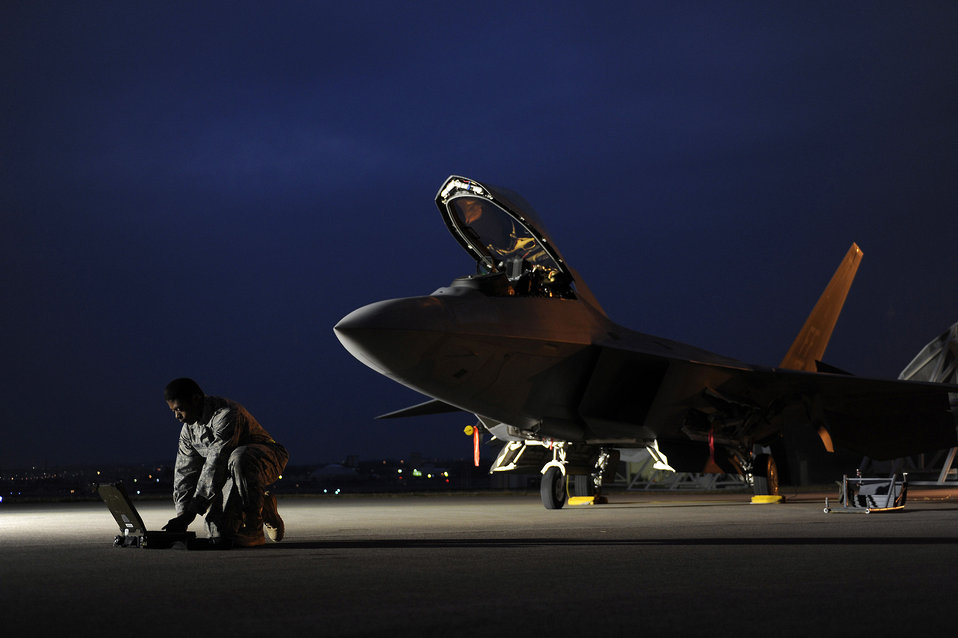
All systems go

Airman 1st Class Aaron Tate inputs data into his portable maintenance aid Jan. 21 in front of an F-22 Raptor at Kadena Air Base, Japan. Airman Tate is deployed from the 27th Fighter Squadron at Langley Air Force Base, Va.